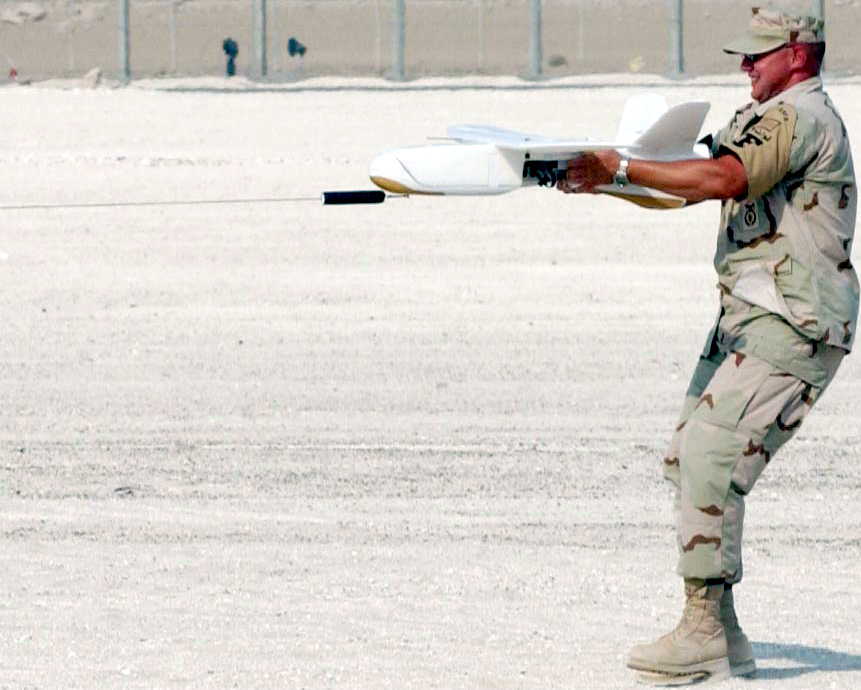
SOUTHWEST ASIA (AFPN) -- Staff Sgt. Brian Bankowski launches a Force Protection Airborne Surveillance System, also known as the Desert Hawk, here July 23. Operators slingshot the unmanned aerial vehicle into the air with a 50-foot bungee cord. Sergeant Bankowski is assigned to the 380th Expeditionary Security Forces Squadron here and deployed from Dyess Air Force Base, Texas.